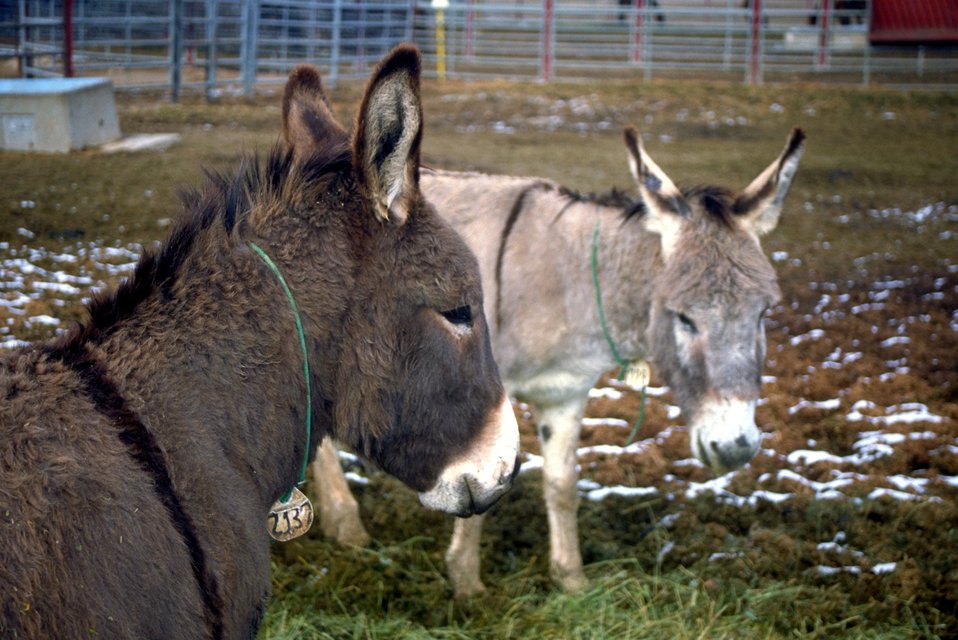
Salt Lake Regional Wild Horse and Burro Center Butterfield Canyon.